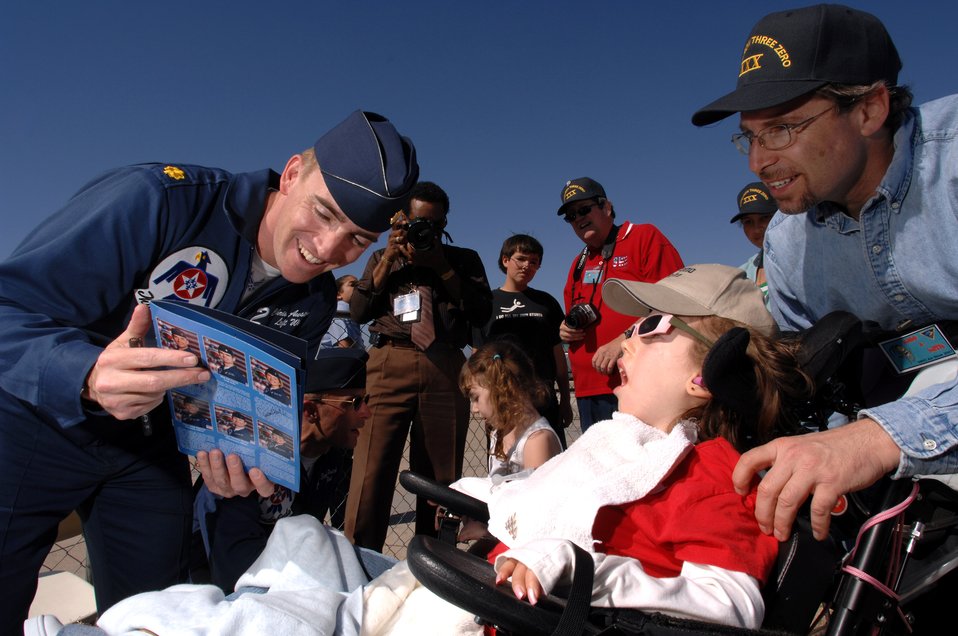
T-Birds getting ready for the airshow

Thunderbird pilot Maj. Chris Austin visits with special needs and